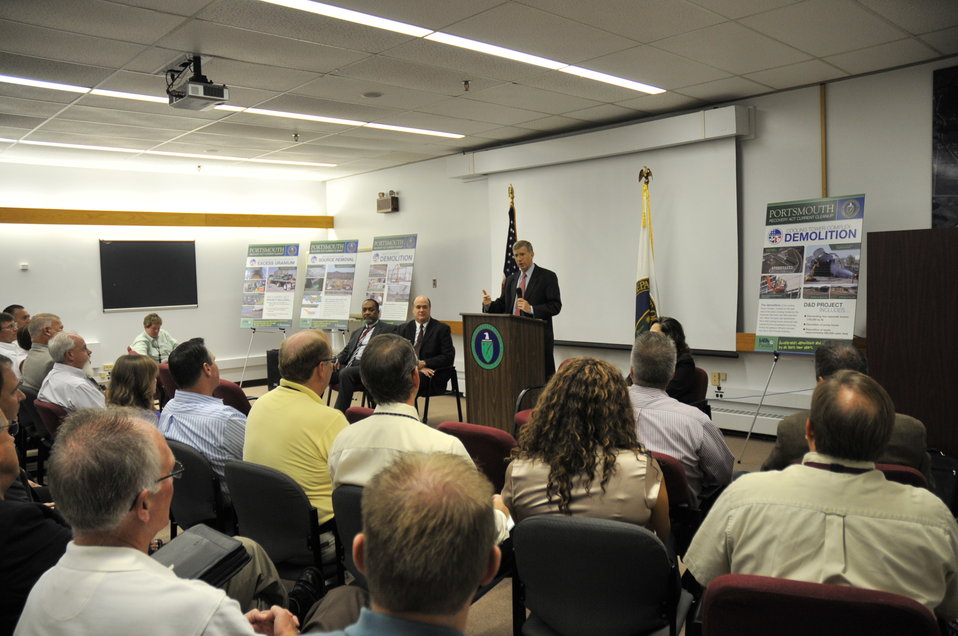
Deputy Secretary Poneman speaks at an All-Hands Session at the Portsmouth Site in Piketon, Ohio on September 9 with DOE staff members and contractor representatives.